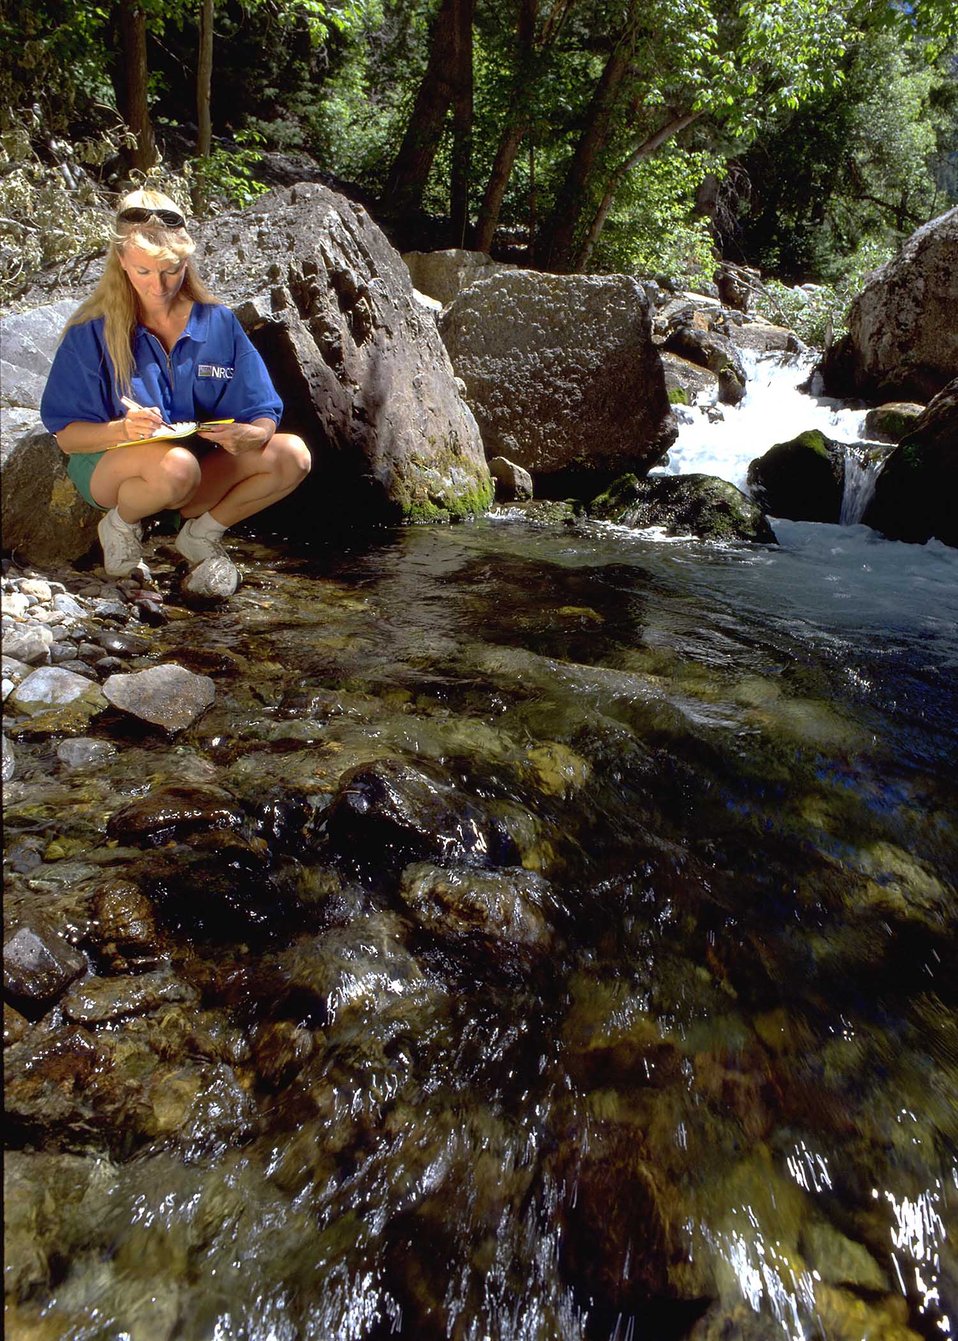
Janice Richardson, NRCS Soil Conservation Technician, examines plant life and stream flows in the American Fork River near Lehi, UT.